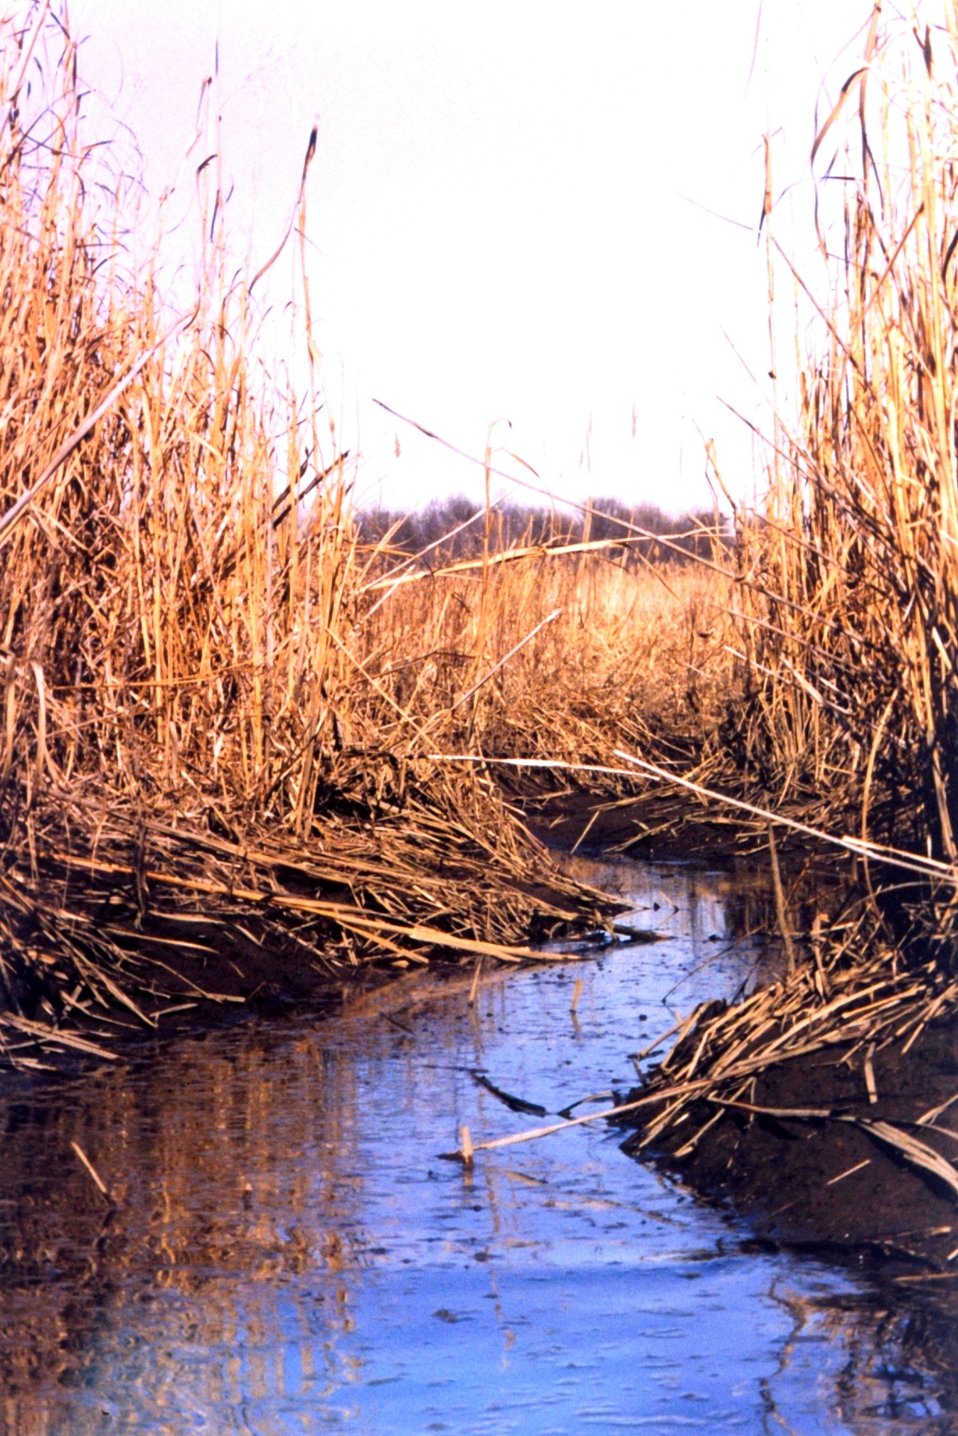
Winter marsh at low tide.